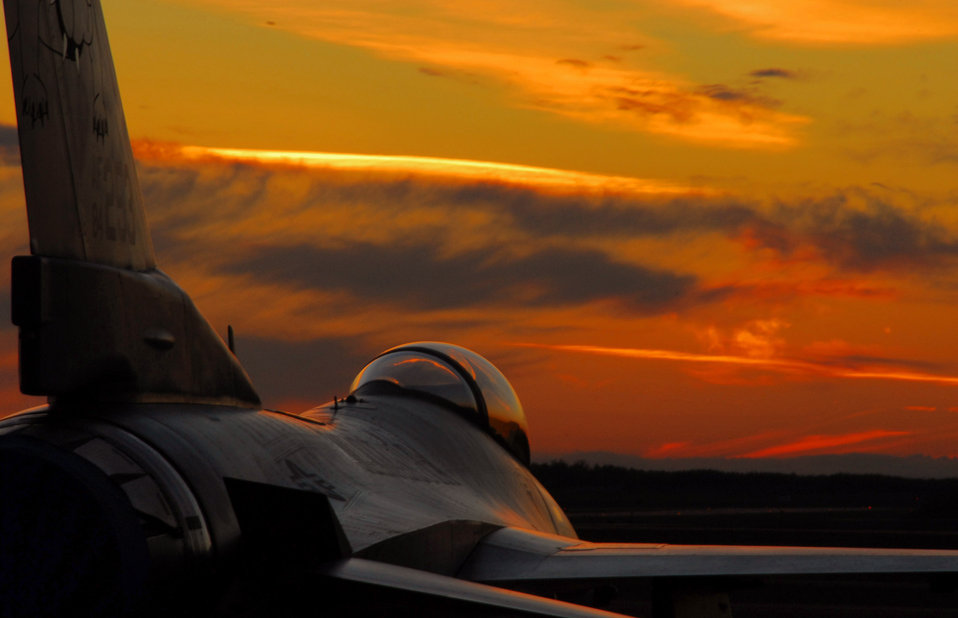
Minnesota sunset

A 148th Fighter Wing F-16 Fighting Falcon from the Minnesota Air National Guard rests awaiting the next day's inspection in Duluth, Minn. The unit is undergoing an Operational Readiness Inspection designed to evaluate the wing's ability to prepare and deploy servicemembers and equipment to a combat environment.